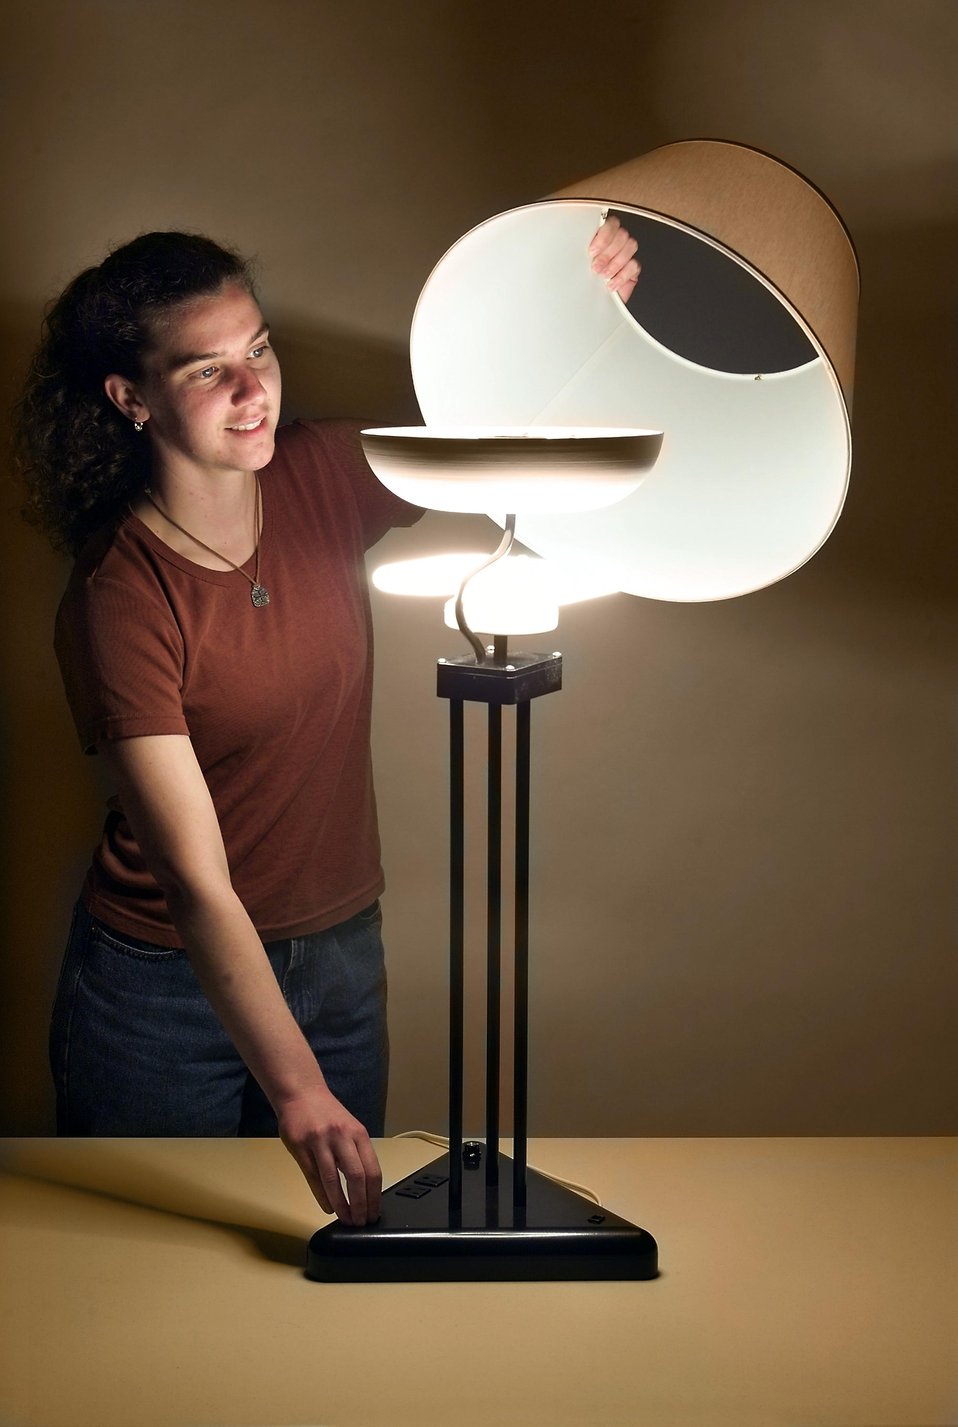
ENERGY EFFICIENT LIGHTING DEVELOPED AT LAWRENCE BERKELEY NATIONAL LABORATORY.

LBNL SCIENTISTS ARE DEVELOPING SAFER, MORE EFFICIENT AND BRIGHTER LAMPS AT THE LIGHTING SYSTEMS GROUP OF THE LAB'S ENVIRONMENTAL ENERGY TECHNOLOGIES DIVISION.